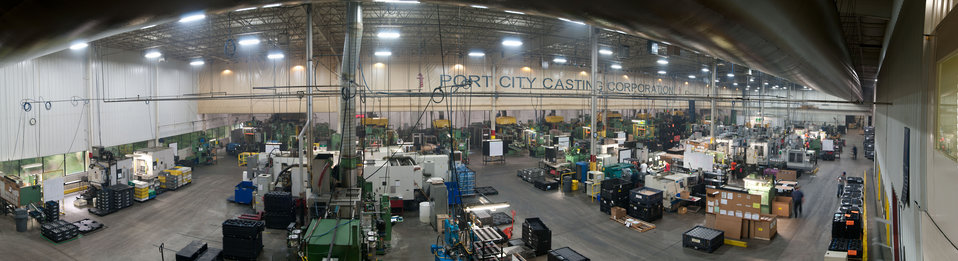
6060406268 e4913eccd1 o

Port City Group’s Port City Castings Corporation manufactures high-pressure aluminum die-castings, mostly for the automotive industry, in Muskegon, MI, facility on Wednesday July 20, 2011. Port City Group boosted its employment by 12 percent over last year thanks to two Rural Business Guaranteed Loans totaling $9.6 million. In its 80,000 sq. ft. facility, machines that range from 800 – 1,600 tons, and cast A380 aluminum alloy products from melted ingots of aluminum, into automotive components of U.S.A. made vehicles. The process features a variety of robotic presses; computer controlled machining; quality control facility; and complete measurement and testing laboratory. In 2009 banks were backing out of loans for PCG equipment purchase agreements. The U.S. Department of Agriculture (USDA) loan guarantee helped make the loan possible with its guarantee. PCG obtained the needed robotic and other equipment. This resulted in a stable workforce that has since grown. When asked about their USDA experience, Port City Group Sales Manager Laura LaGuire said, “It was great! They were very helpful. Everything that came up was handled smoothly, the money came in place when it was needed, and it was a very smooth transition.”